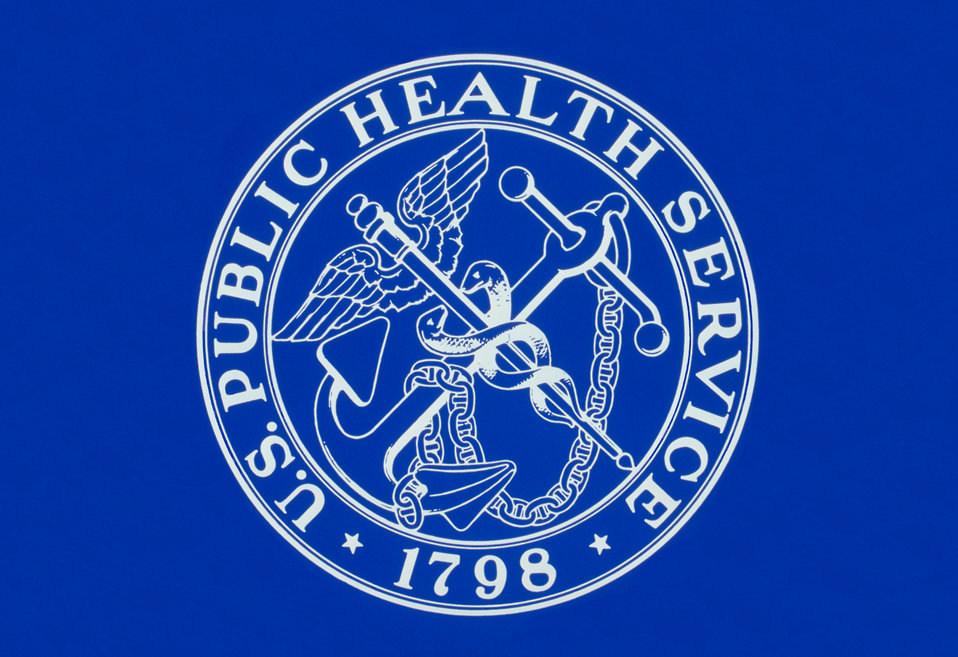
This is the official seal of the United States Public Health Service.